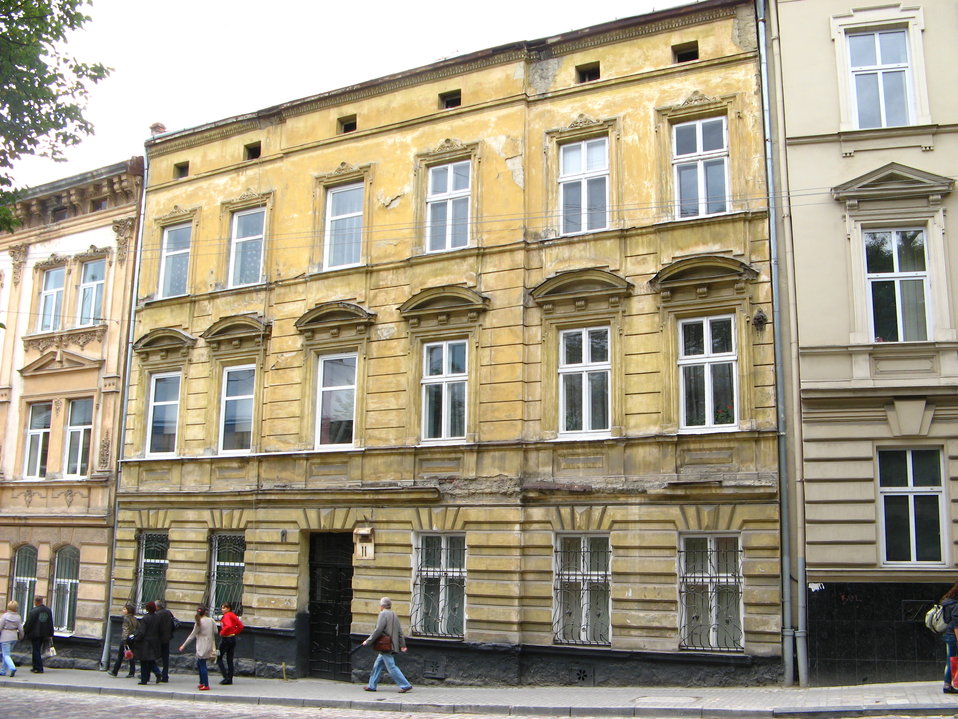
Українська: 11, вул. Гуцульська (Львів)